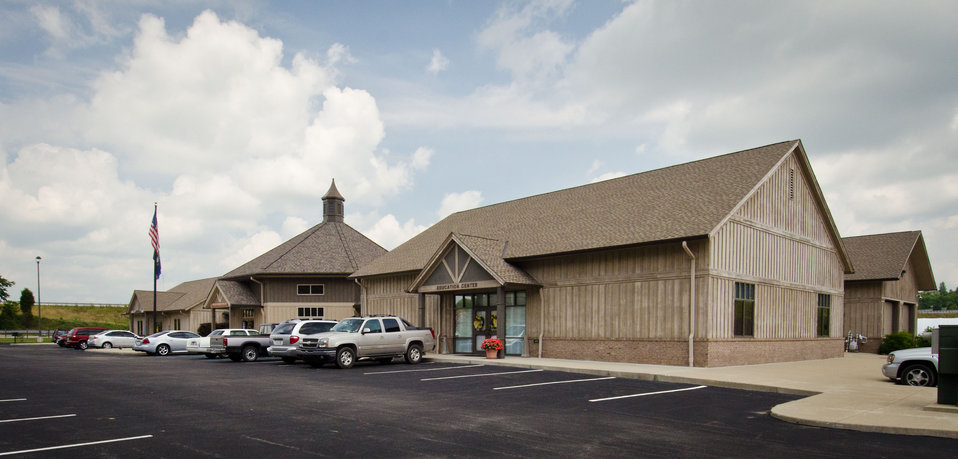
Southwest view of the Bath County Agricultural Education and Marketing Center, Owingsville, KY, on Friday, July 15, 2011. The adjoined buildings are the Education Center (right with two windows), commercial kitchen with two catering loading docks (far right), Kentucky Market Pavilion (center), and the Bath County Cooperative Extension (left). The farmer's market and produce auction facilities are behind these buildings. The Center was the recipient of a $400,000 Rural Business Enterprise Grant. It has given farmers and producers from Bath and surrounding counties the opportunity to manufacture and market their locally grown and locally produced value-added and “Kentucky Proud” branded products, including but not limited to, fresh produce, artisan crafts and specialty food products. The Center is open year-round and allow residents to sell products in four different retail categories, including Kentucky products, regional crafts, “green” groceries and bakery/deli. Several producers expressed their gratitude for Rural Development’s assistance in making the center a reality. The project was made possible through American Recovery and Reinvestment Act of 2009 funding enacted by the 111th United States Congress in February 2009 and signed into law on February 17, 2009, by President Barack Obama.